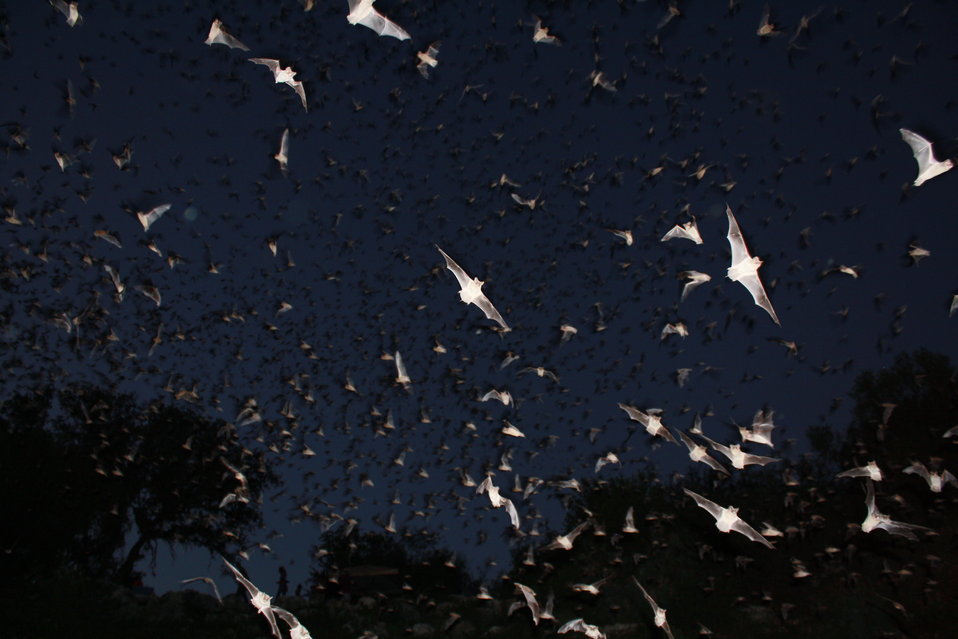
Mexican free-tailed bats exiting Bracken Bat Cave